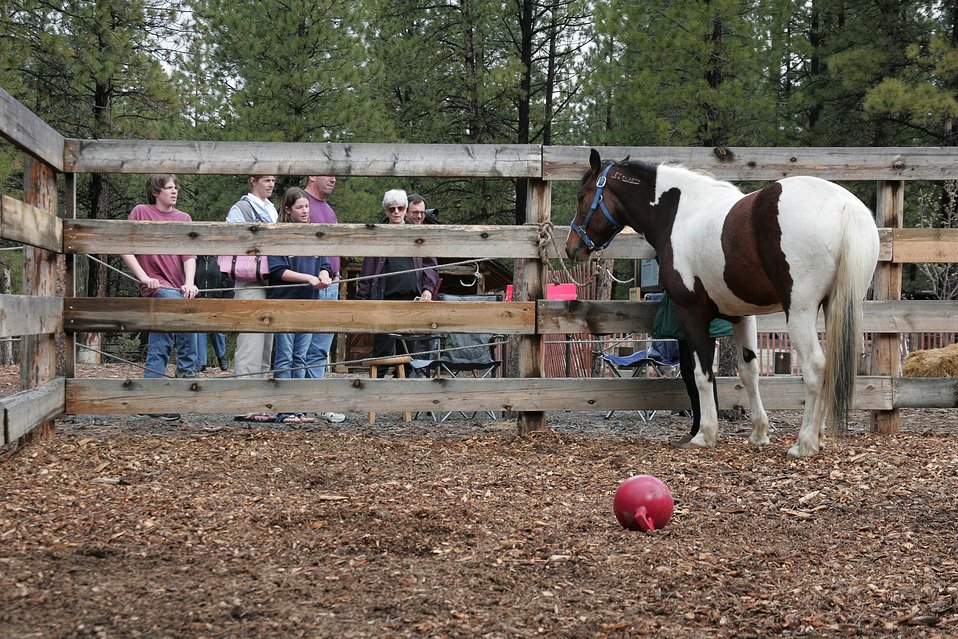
Sage, a wild horse from the Paisley Wild Horse Herd Management area in Oregon, eyes potential adopters throught the corral fence.